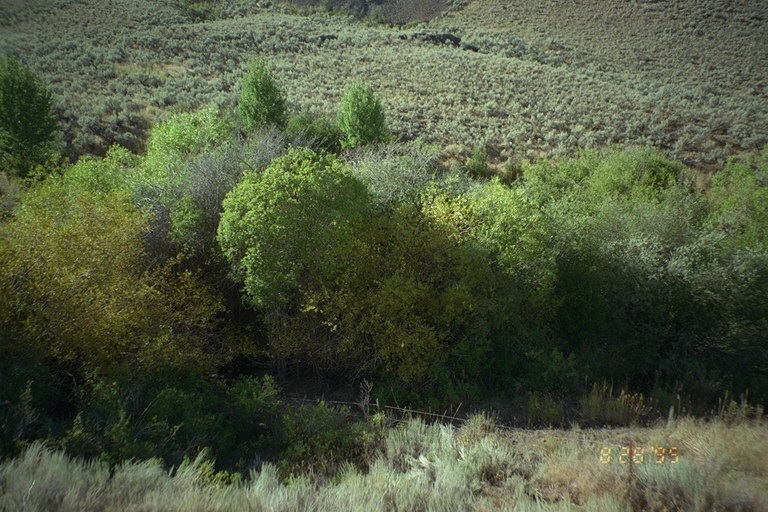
Riparian area Public Lands Salmon Field Office UCSC Upper Columbia Salmon Clearwater District